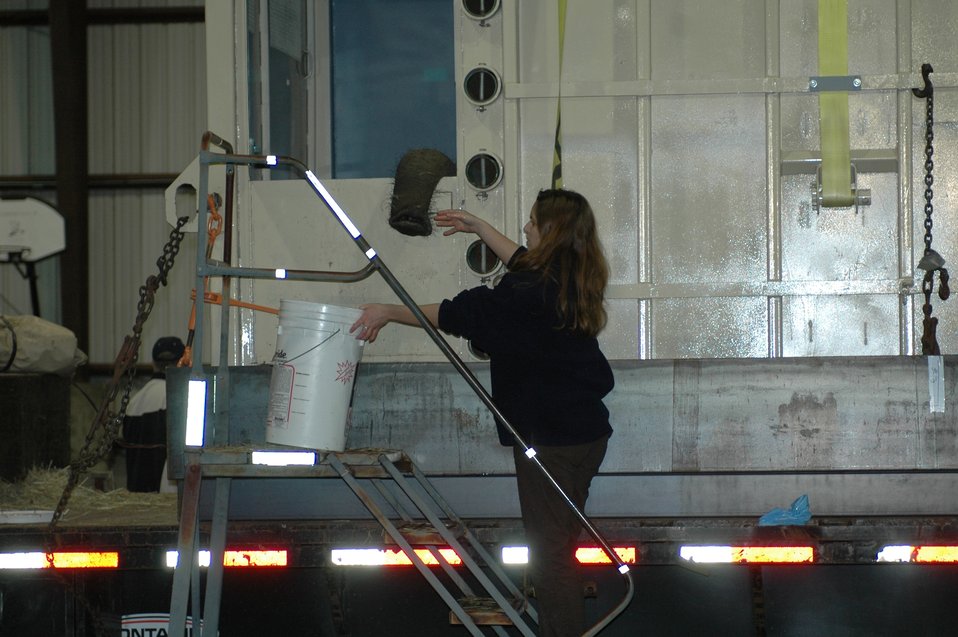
Operation Maggie Migration: mission of mammoth proportions

A handler feeds Maggie, after she was flown on a C-17 Globemaster III from the Alaska Zoo in Anchorage, Alaska, to Travis Air Force Base, Calif. Maggie will be transported to an animal sanctuary near San Andreas, Calif.